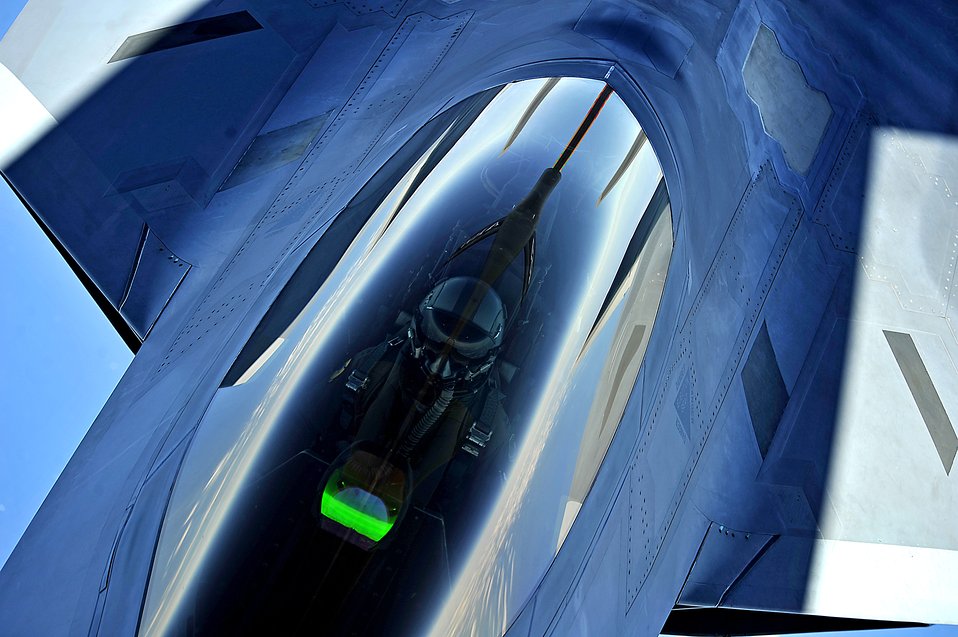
F-22 Raptor

A KC-135 Stratotanker with the 756th Air Refueling Squadron, Joint Base Andrews Naval Air Facility, Md. refuels a 1st Fighter Wing's F-22 Raptor from Joint Base Langley-Eustis, Va. off the east coast on May 10, 2012. The first Raptor assigned to the Wing arrived Jan. 7, 2005. This aircraft was allocated as a trainer, and was docked in a hanger for maintenance personnel to familiarize themselves with its complex systems. The second Raptor, designated for flying operations, arrived Jan. 18, 2005. On Dec. 15, 2005, Air Combat Command commander, along with the 1 FW commander, announced the 27th Fighter Squadron as fully operational capable to fly, fight and win with the F-22. (U.S. Air Force Photo by: Master Sgt. Jeremy Lock)